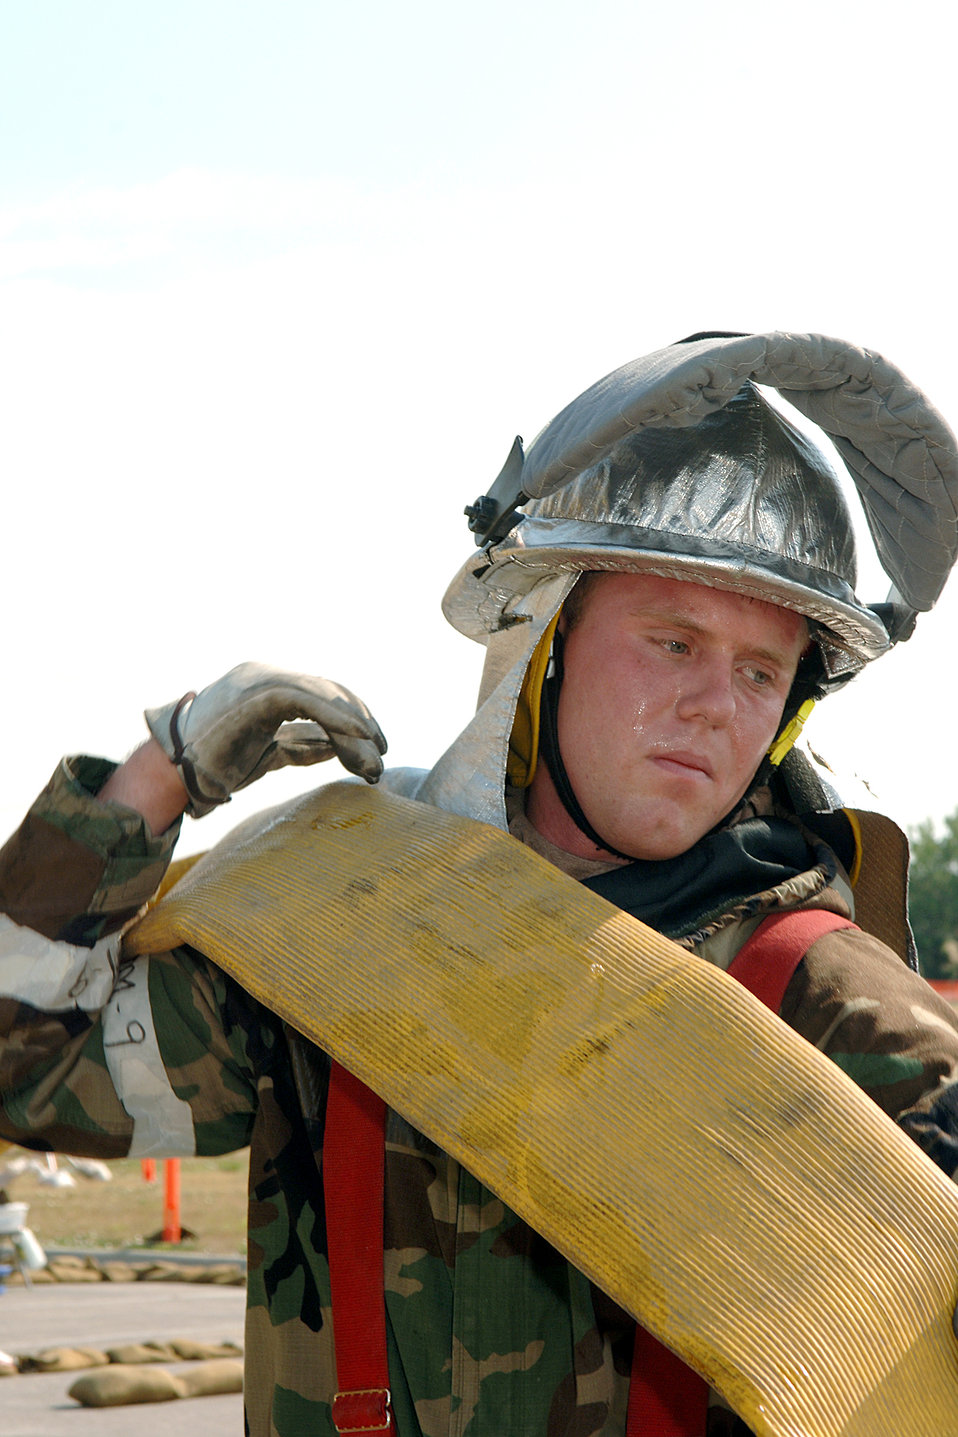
Fired up

Airman 1st Class Lance Brozik reels in a water hose after a simulated fire at Ellsworth Air Force Base, S.D., on July 19. The scenario was part of an operational readiness inspection. Airman Brozik is with the 28th Civil Engineer Squadron.